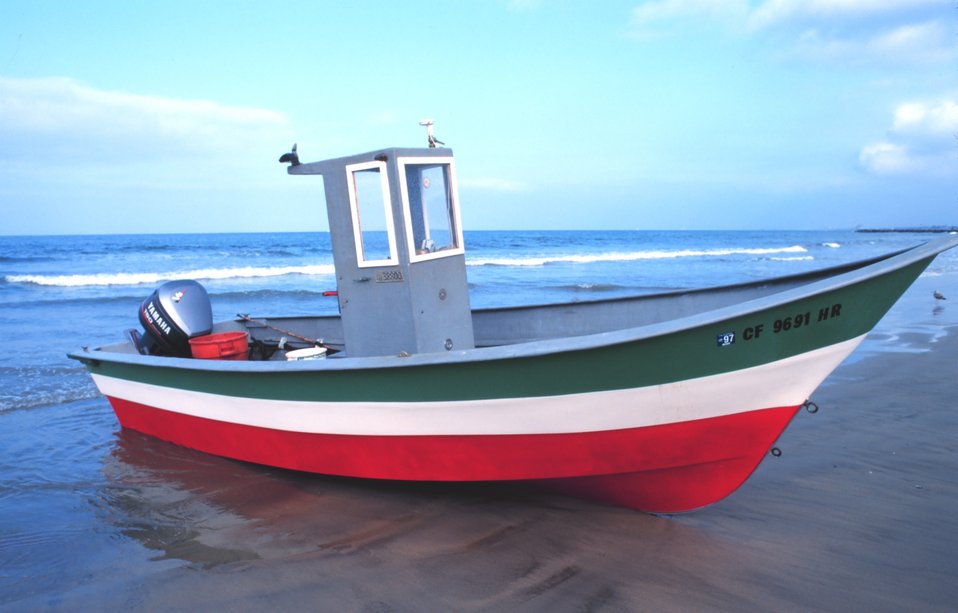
A fishing dory owned by Mark Hickson, ready to be trailered home